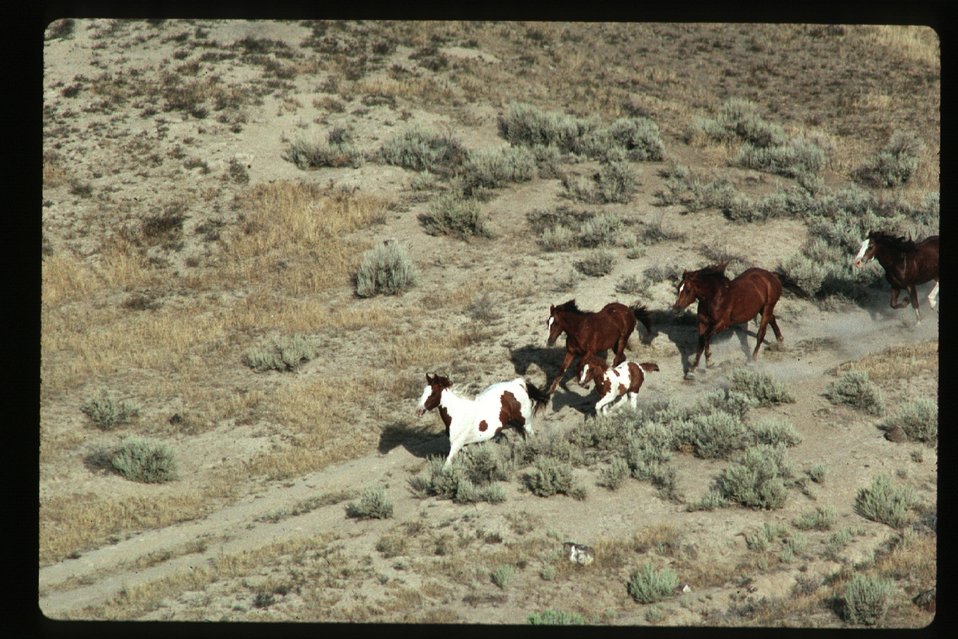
Wild Horse Roundup from helicopter Wild Horse and Burro Adoption Program LSRD Lower Snake River District